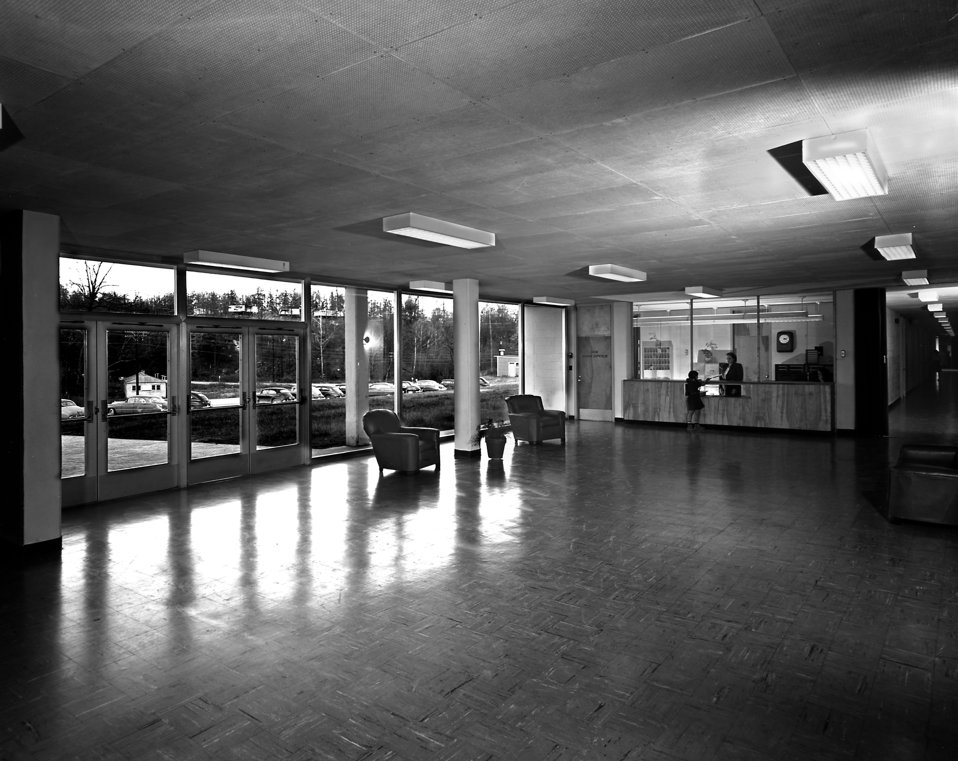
Willow Brook School Interior Oak Ridge 1949

5763-6 DOE photo Ed Westcott 11-29-1949 Oak Ridge Tennessee